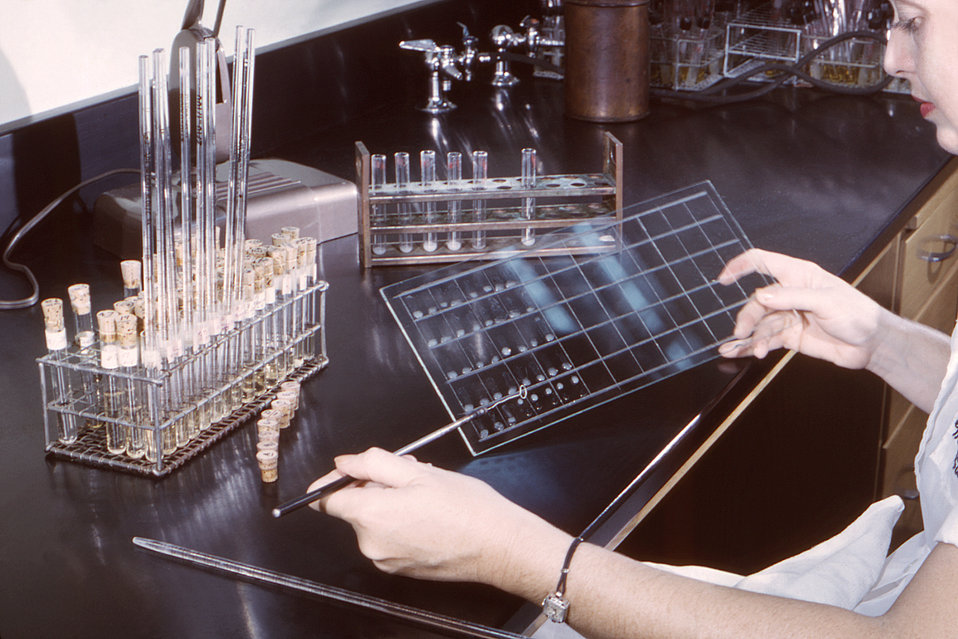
This historic 1963 photograph depicted a lab technician, as she was performing a slide agglutination test upon serologic groupings of Salmonella spp. cultures.